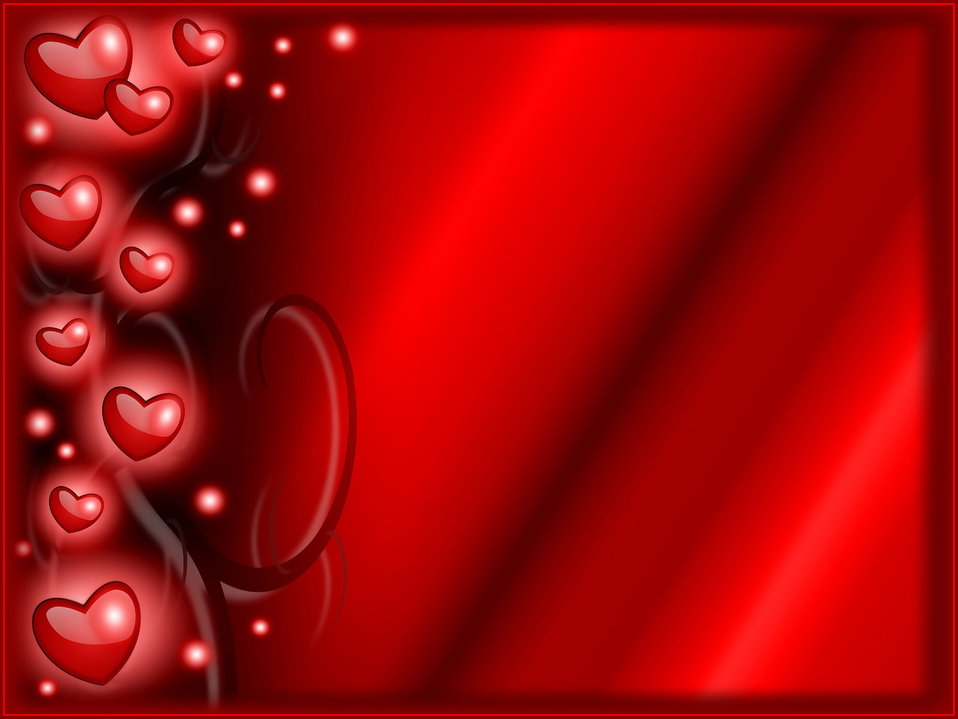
Hearts of love

Background.